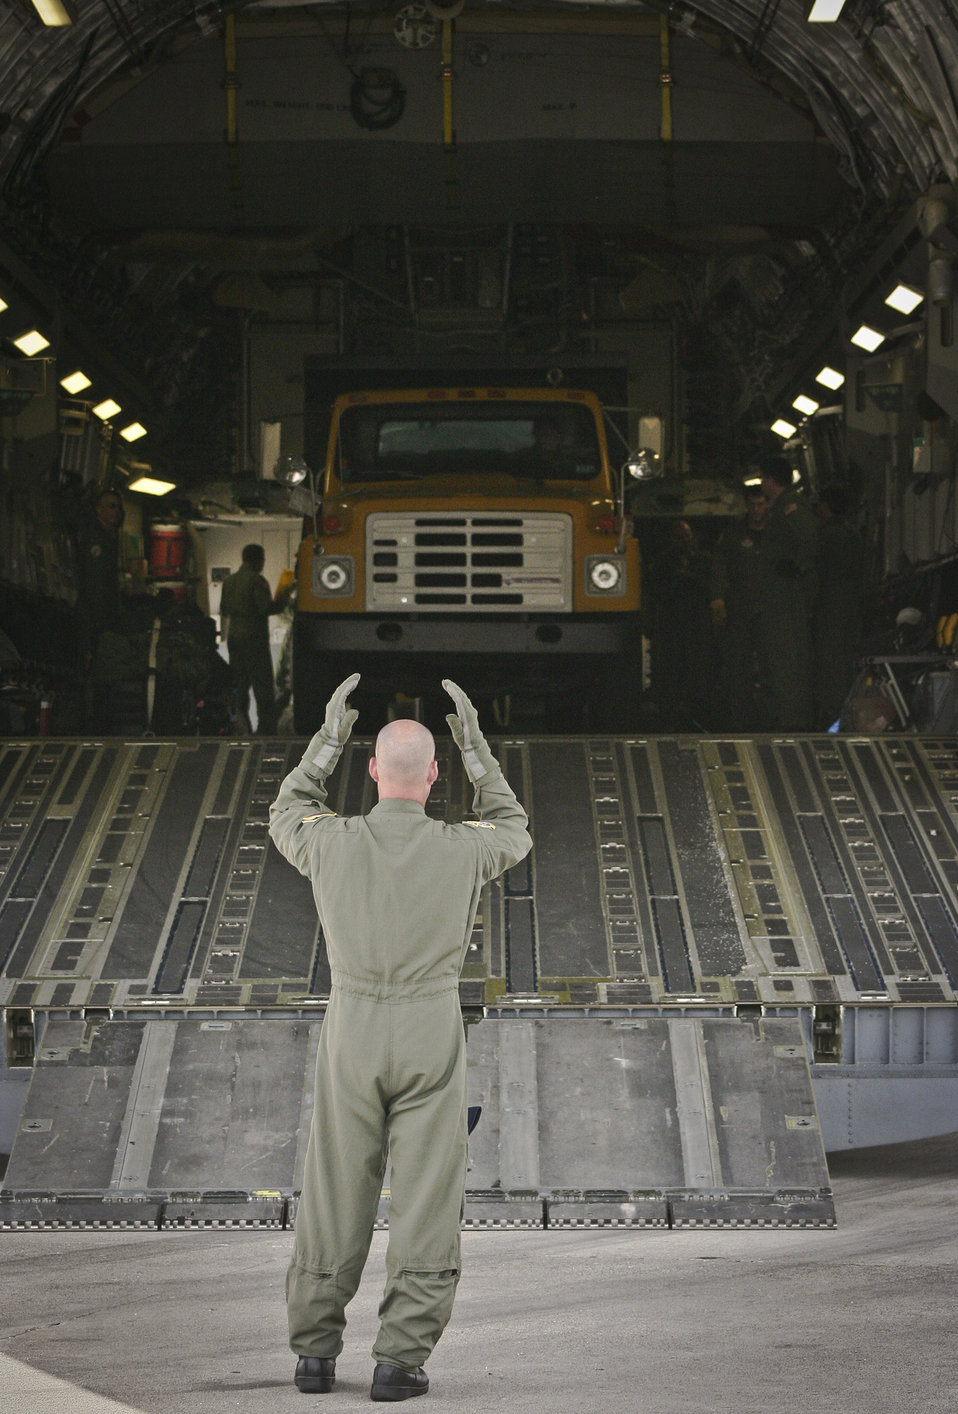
Aid to Haiti

Tech. Sgt. Arrin Baker marshals a dump truck out of a C-17 Globemaster III July 1, 2011, during a humanitarian-aid off-load in Haiti. Baker is assigned to the 300th Airlift Squadron.